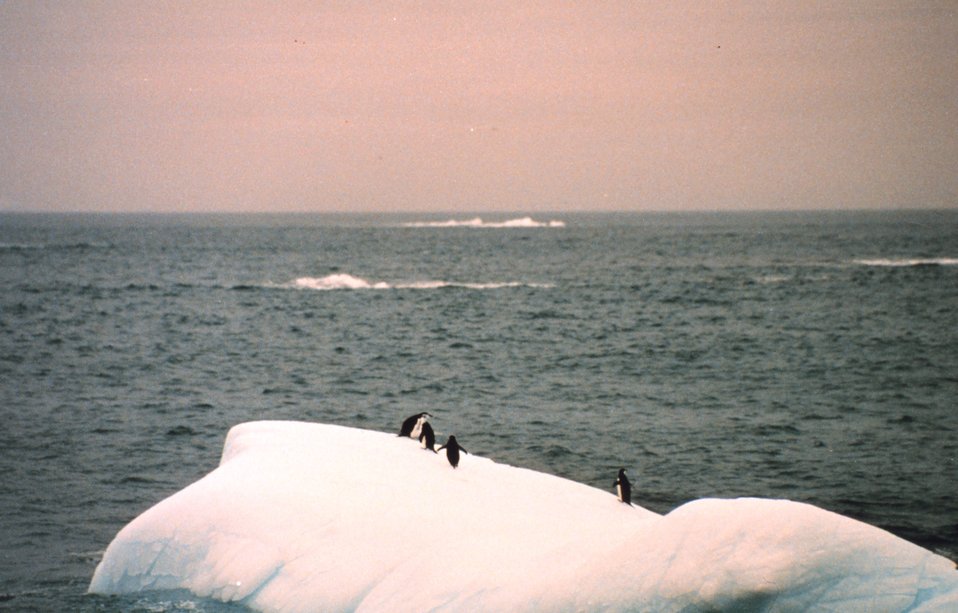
Adelie penguins on a small iceberg off the Antarctic Peninsula.